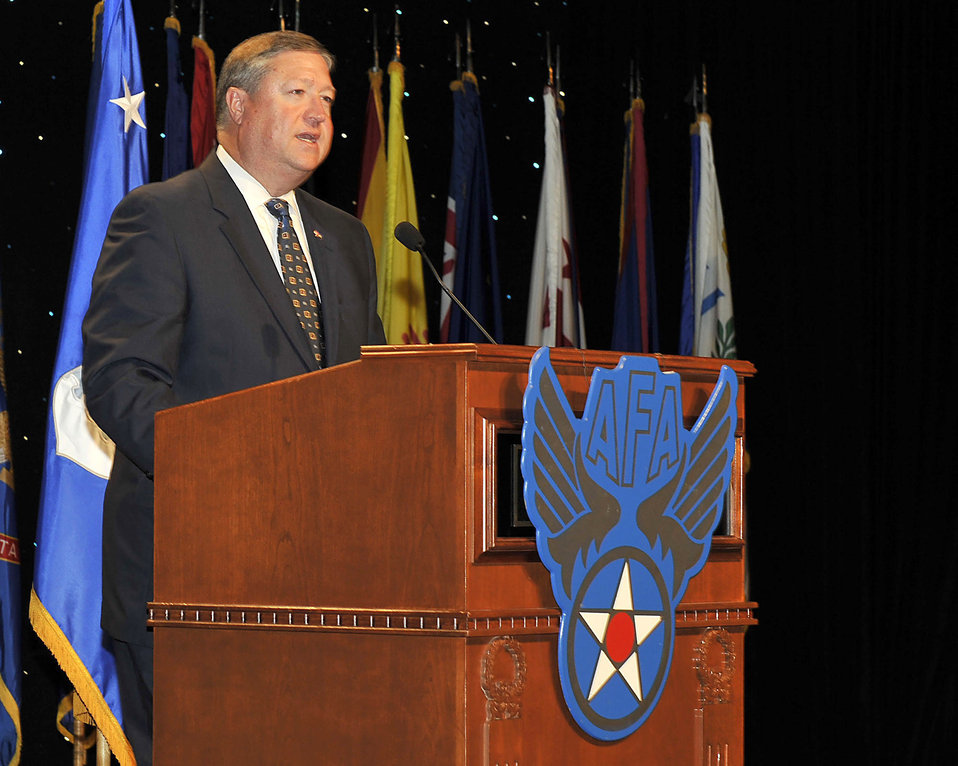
Acting Secretary Donley speaks at AFA conference

Acting Secretary of the Air Force Michael B. Donley speaks to attendees at the 24th annual Air Force Association Air & Space Conference and Technology Exposition Sept. 15 in Washington.